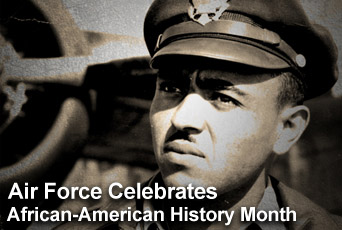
Air Force celebrates African American History month.